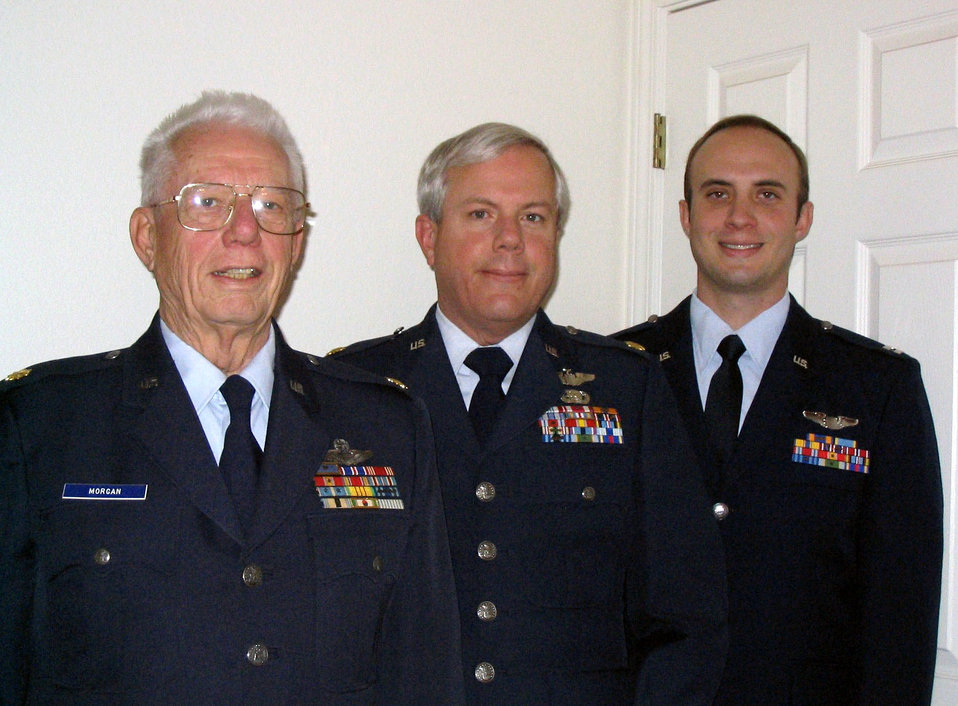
Three generations of Hercules pilots

Retired Majs. David Morgan Jr. and Pat Morgan and Maj. David Morgan share three generations of Air Force stories and experiences. All three members of the Morgan family -- grandfather, father and son -- have flown the C-130 Hercules.